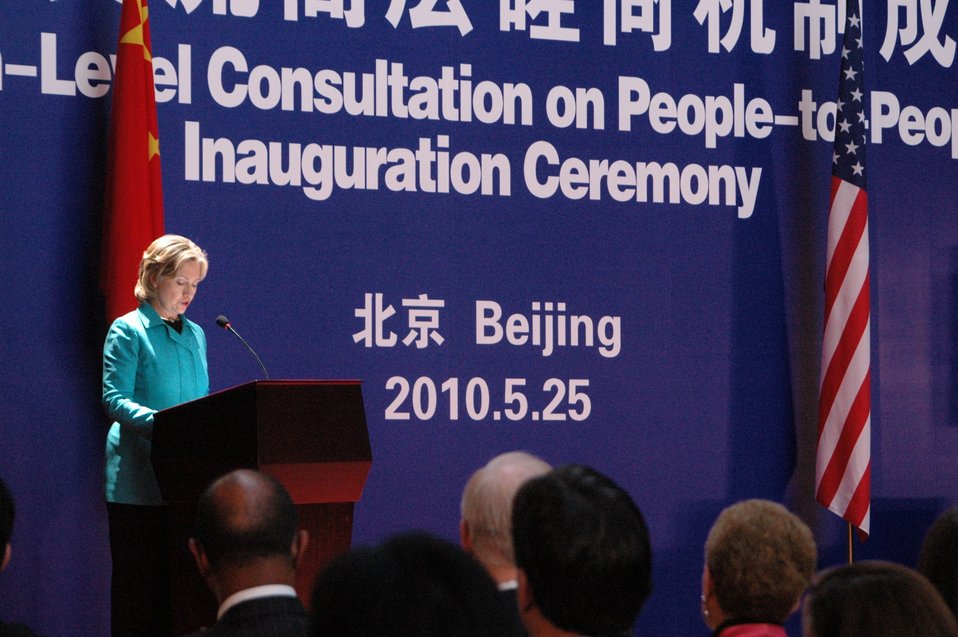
Secretary Clinton Delivers Remarks at the People-to-People Exchange Ceremony

U.S. Secretary of State Hillary Rodham Clinton delivers remarks at the U.S.-China Consultation on People-to-People Exchange ceremony at the National Center for the Performing Arts in Beijing, China, May 25, 2010.